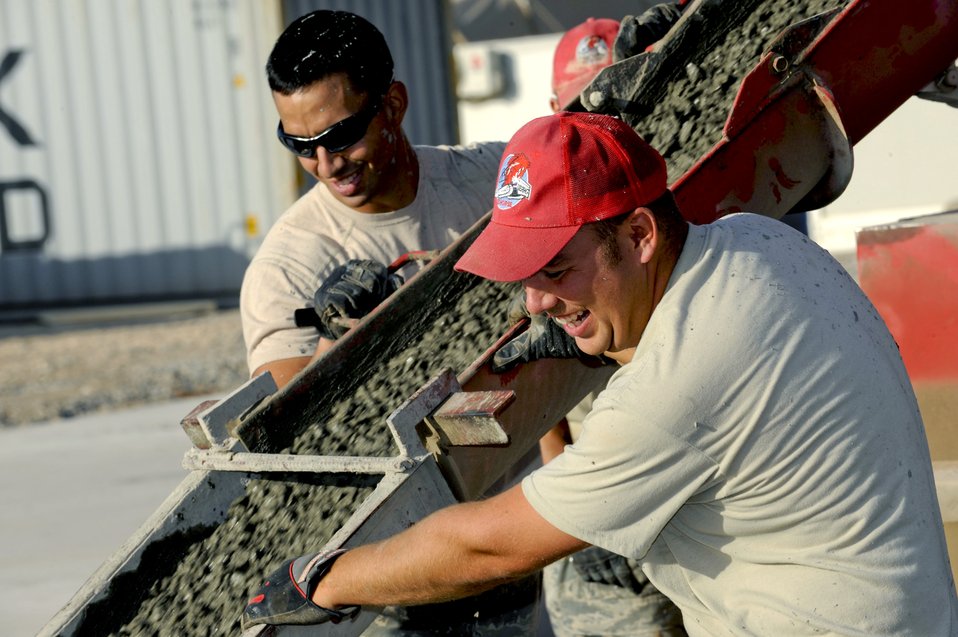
RED HORSE Airmen construct shelter pads

Airmen with the 809th Expeditionary RED HORSE Squadron guide the chute as concrete is poured into the steel forms, creating large-area maintenance shelter pads May 15, 2010, at Kandahar Airfield, Afghanistan.